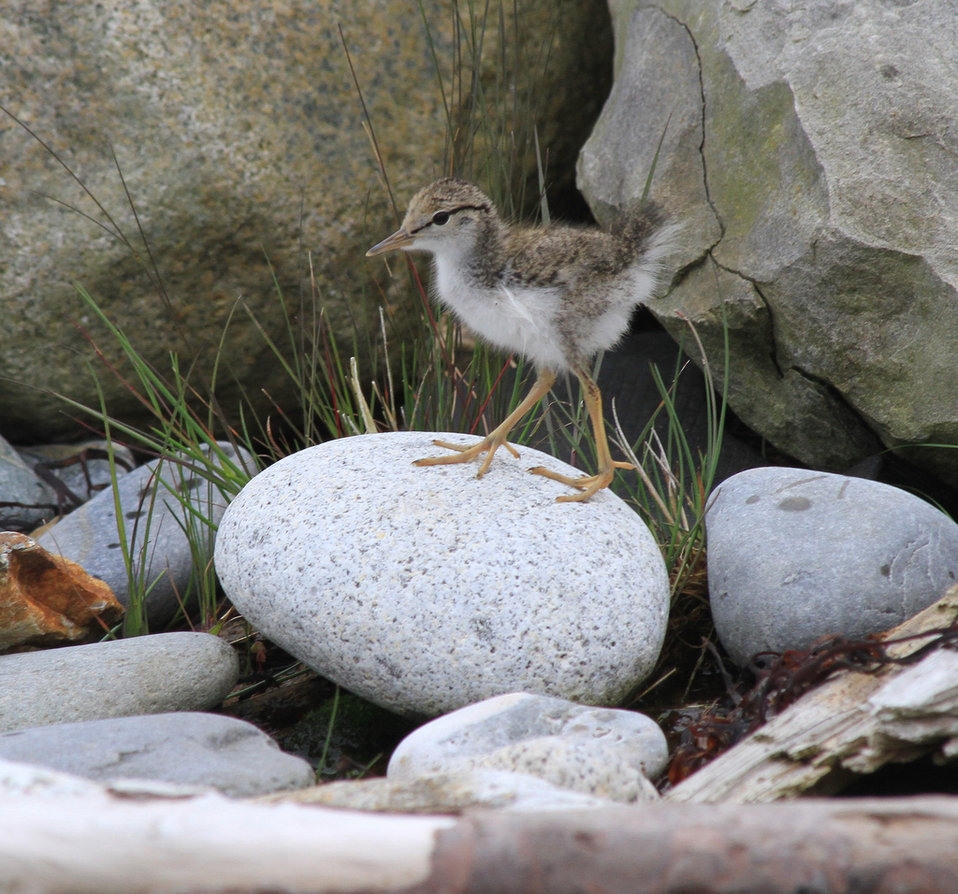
Sandpiper chick

Spotted sandpiper chick on Petit Manan Island, Maine Coastal Islands National Wildlife Refuge, where seabird researchers monitor the breeding success of island birds.